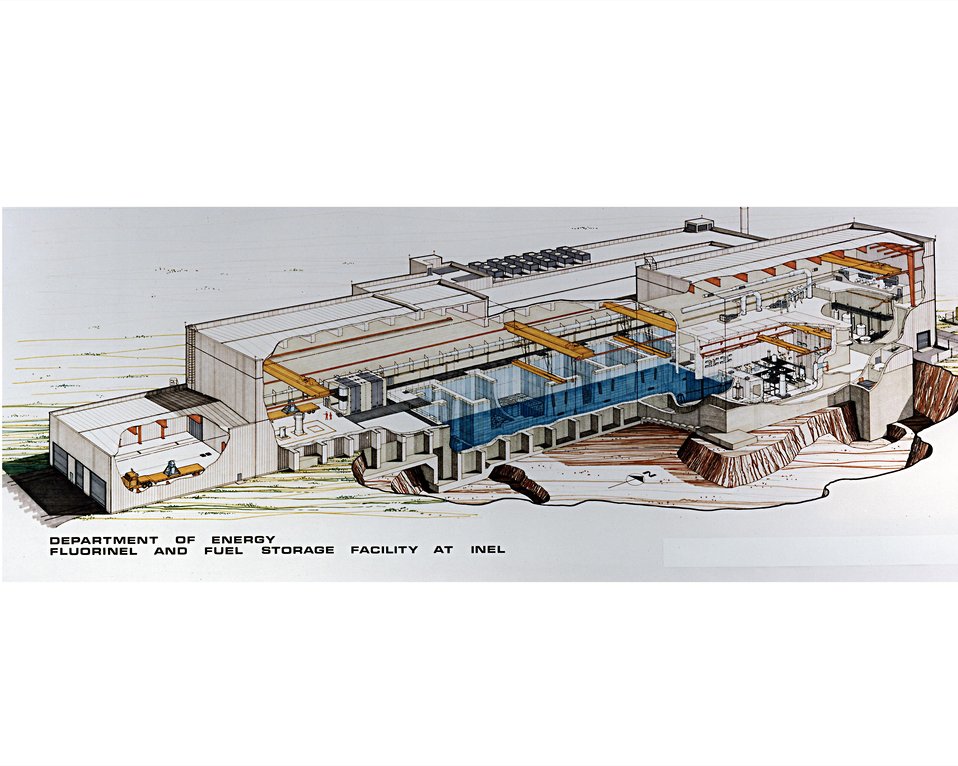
ARTIST'S CUTAWAY DRAWING OF THE FLUORINE FACILITY.

THE FLUORINEL FACILITY WILL INCLUDE AREAS FOR THE RECEIPT, HANDLING, STORAGE, AND DISSOLUTION OF SPENT REACTOR FUEL. THE DISSOLVED SOLUTION WILL BE TRANSFERRED TO EXISTING FACILITIES AT THE IDAHO FUEL PROCESSING FACILITY FOR RE- COVERY OF CONTAINED URANIUM. THE FACILITY WILL PROCESS A WIDE VARIETY OF SPENT FUELS, INCLUDING NAVAL, TEST, AND RESEARCH REACTOR FUELS, TO INCREASE THE AMOUNT OF URANIUM RESOURCE AVAILABLE TO THE UNITED STATES.